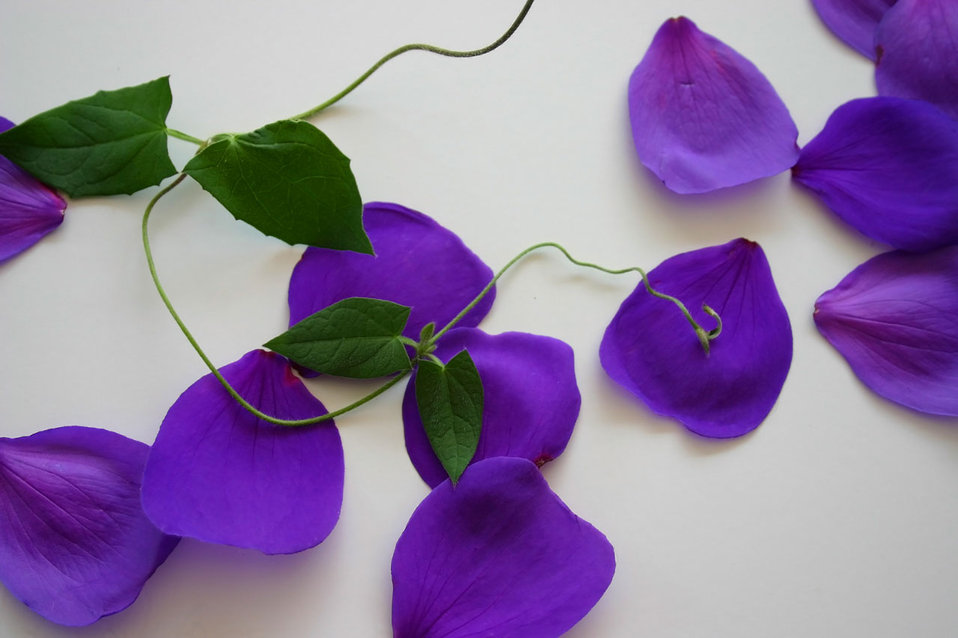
Flower pedals and vine

Purple flower pedals with green vine.